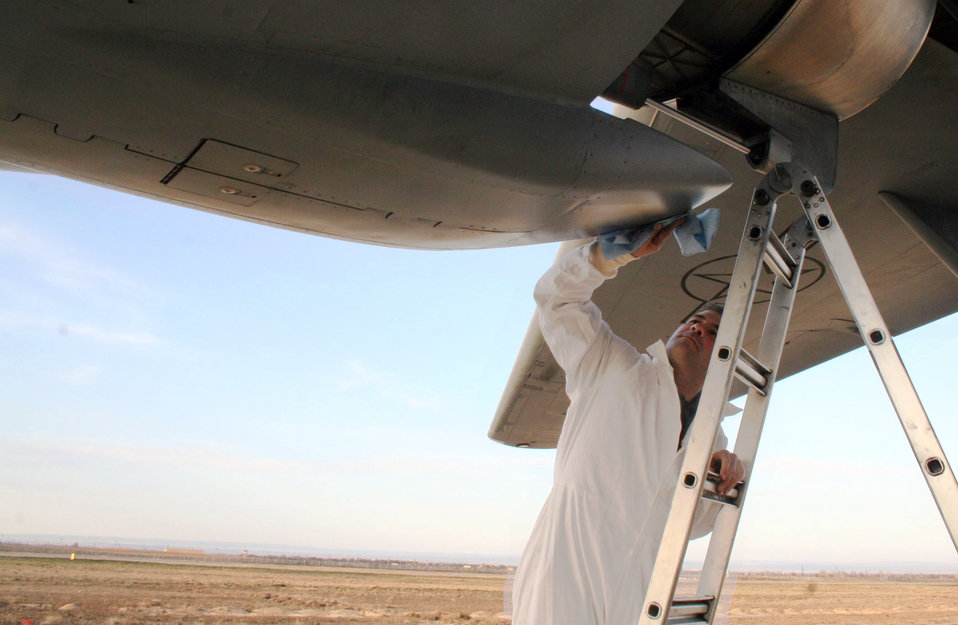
Multi-functional maintainers

Tech. Sgt. Dean DeFrank wipes down an engine after routine servicing at Manas Air Base, Kyrgyzstan, Saturday, March 25, 2006. Sergeant DeFrank is a C-17 engine specialist with the 376th Air Expeditionary Wing Aircraft Maintenance Squadron, but like everyone in his flight, when his part of the job is done he does whatever is required to keep the aircraft at a high standard of maintenance.